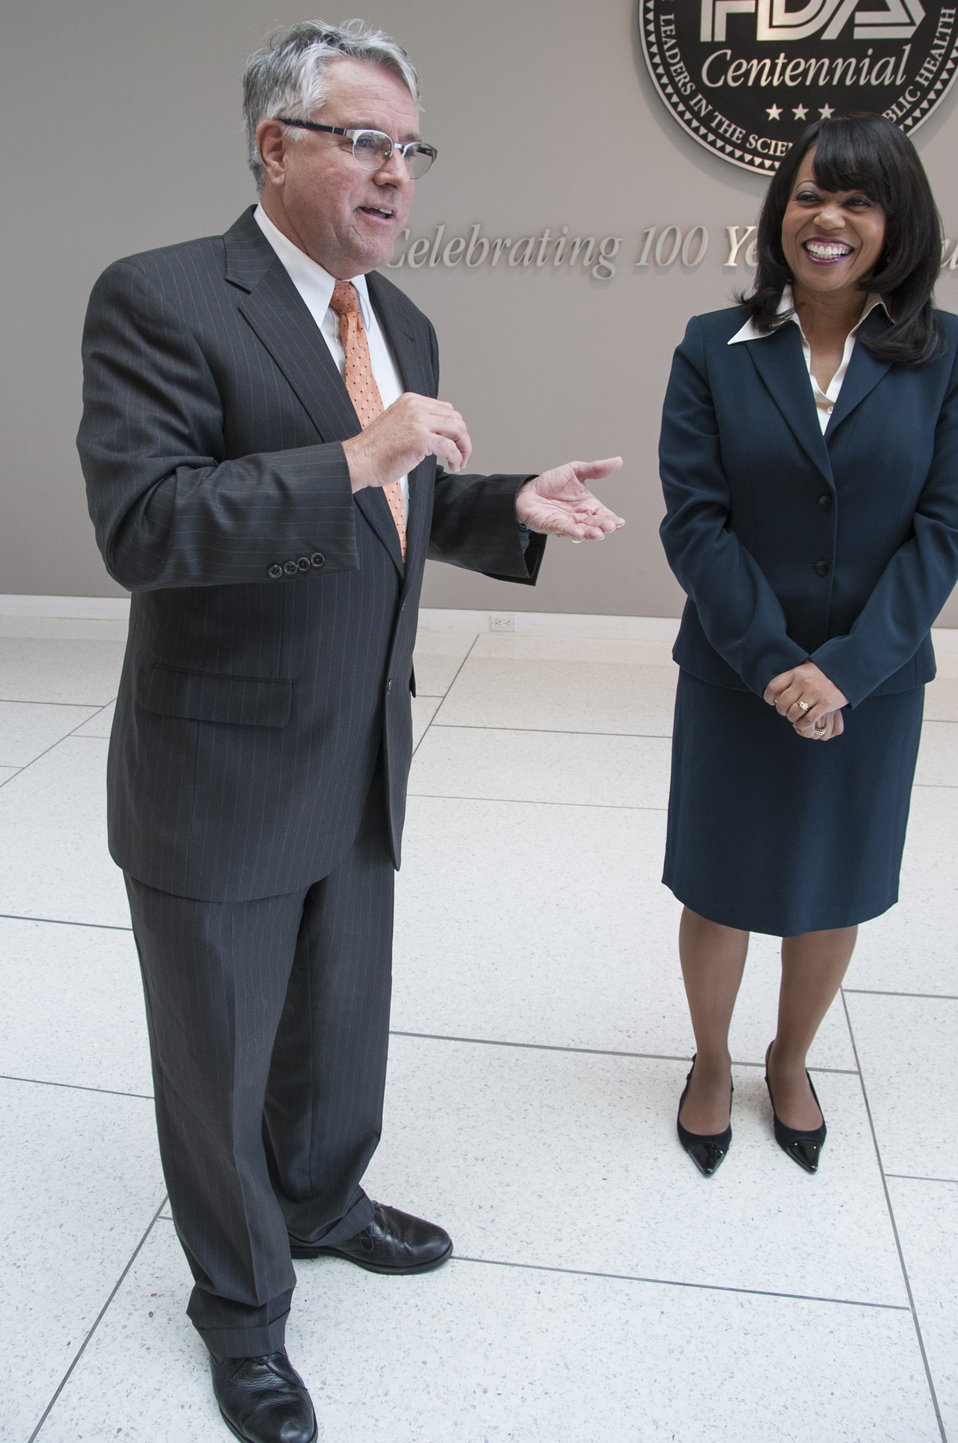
AOA Leadership Award - 9835

Nov. 18, 2013; Michael Duenas, The American Optometric Association (AOA) Chief Public Health Officer (left) expressed thanks to Helene Clayton-Jeter (right) prior to her receiving the 2013 AOA Leadership in Public Health Award for her hard work and success in advancing innovative and effective public health policy solutions, and for helping safeguard the health of the American people.

For more information on Helene's award, read this FDA Voice blog post: blogs.fda.gov/fdavoice/index.php/2013/12/a-vision-worth-h...

This photo is free of all copyright restrictions and available for use and redistribution without permission. Credit to the U.S. Food and Drug Administration is appreciated but not required. Privacy and use information: www.flickr.com/people/fdaphotos/